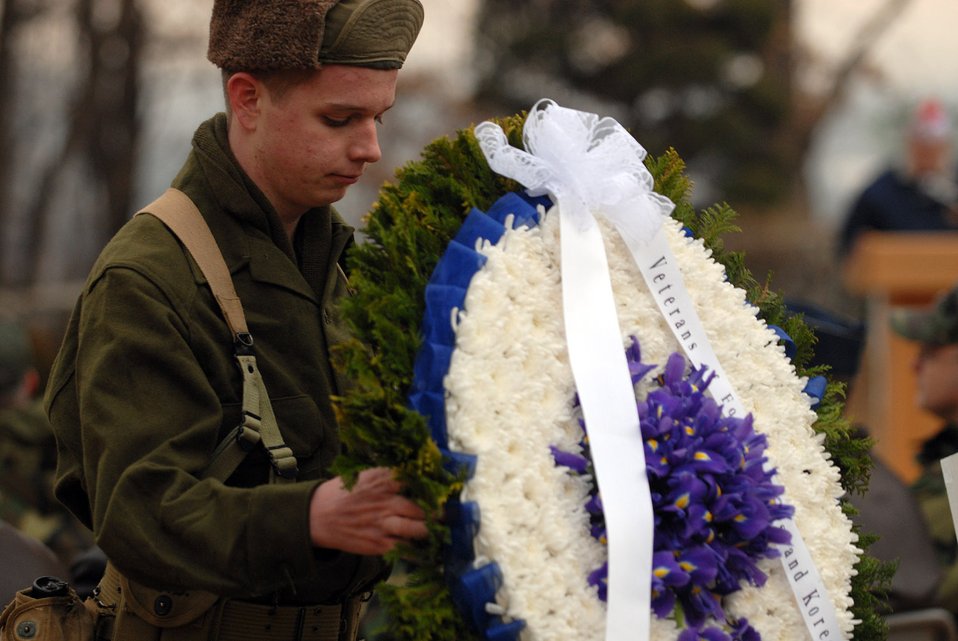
Osan remembers Battle of Bayonet Hill

Robert Carter, a member of the Osan American High School Junior ROTC program, moves one of four wreaths that were placed during the Hill 180 ceremony Feb. 9.